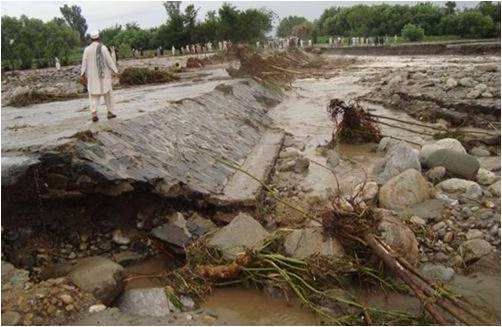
PRT Stands Ready to Help as Province Manages Flash Floods